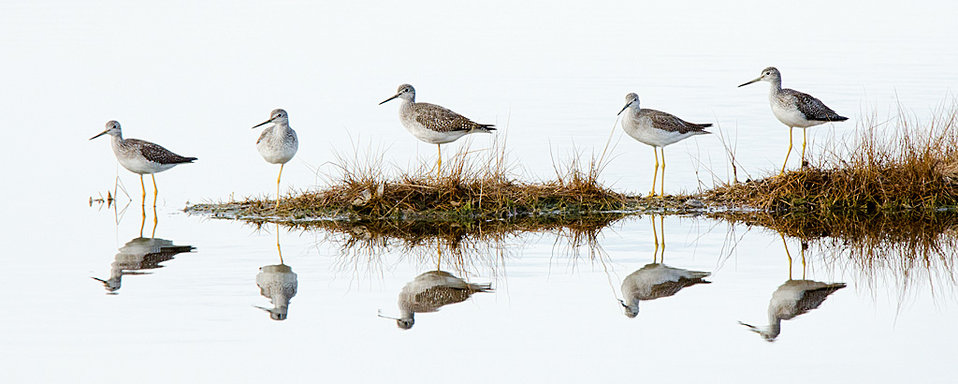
Yellowlegs

Parker River National Wildlife Refuge, MA.